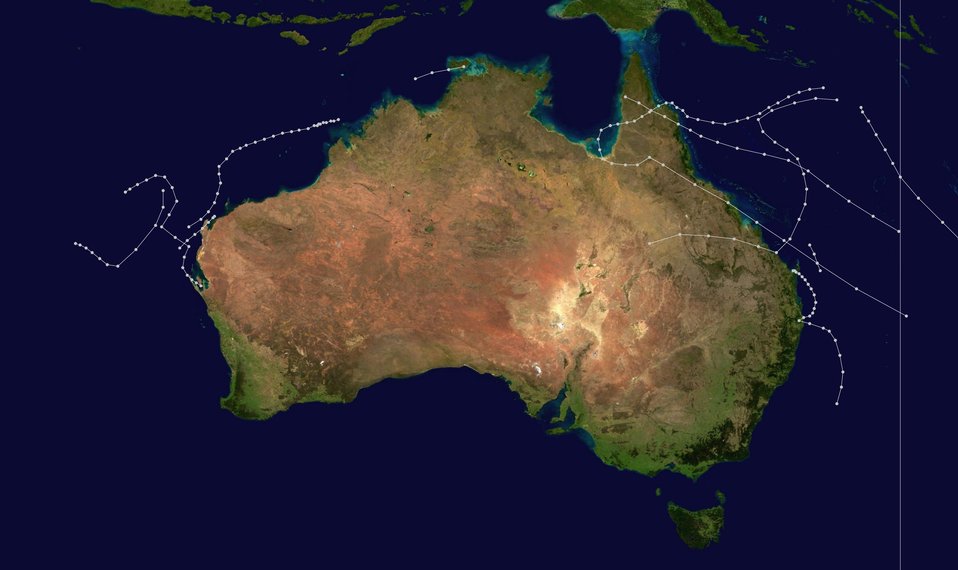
1948-1949 Australian cyclone season summary